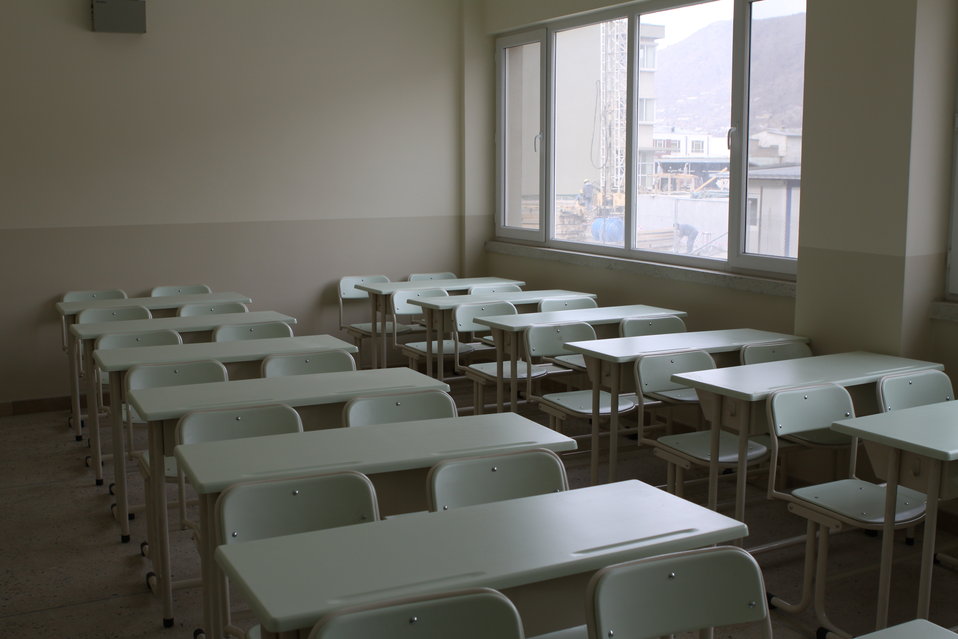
Ghazi high school , Kabul